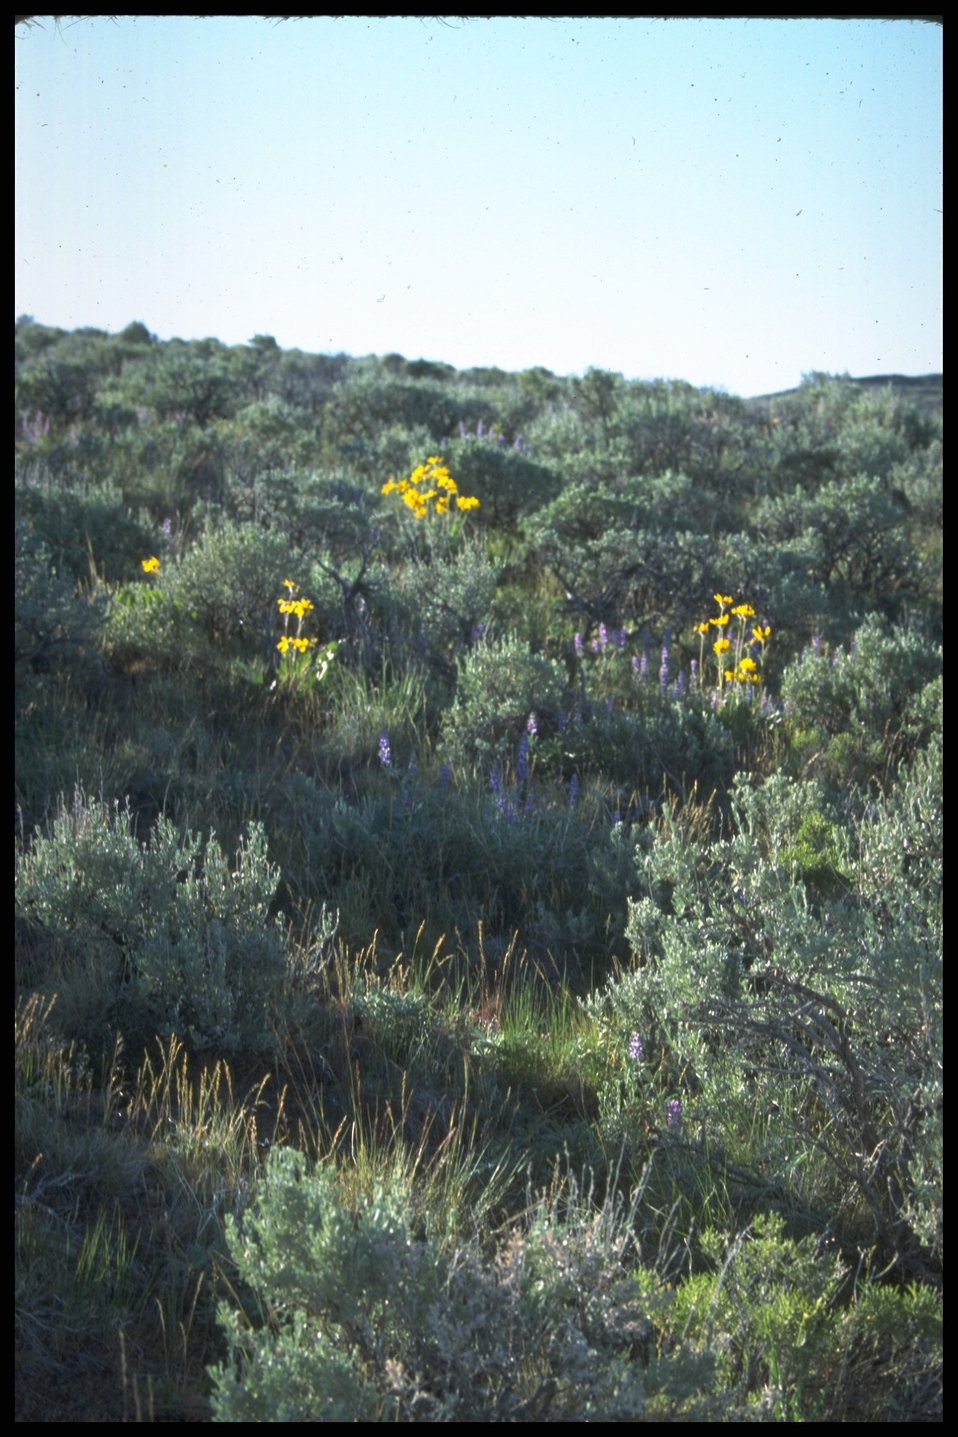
Wildflower habitat, Lakeview District.